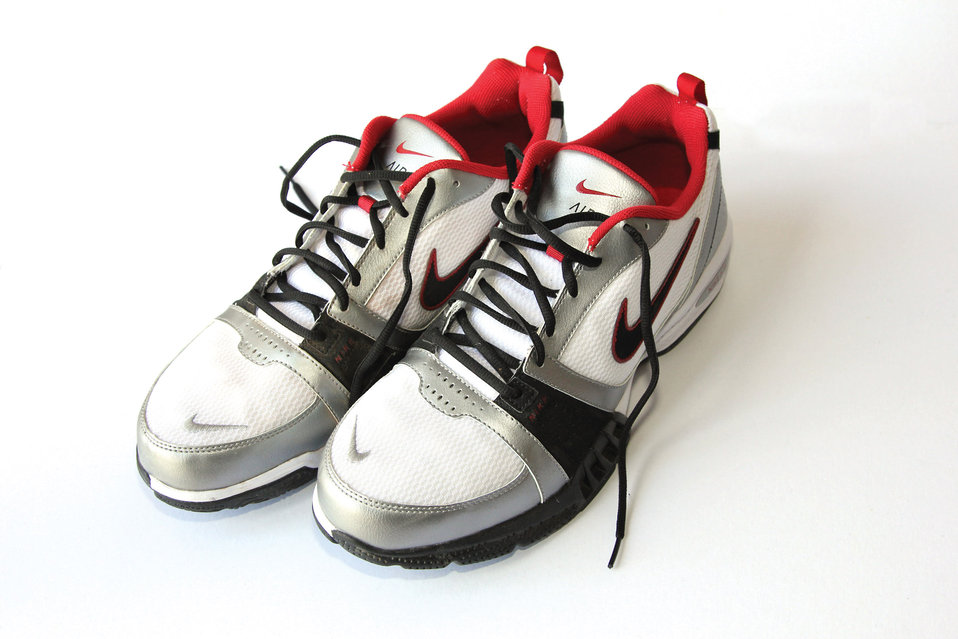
Sports shoes

Men's sports shoes.